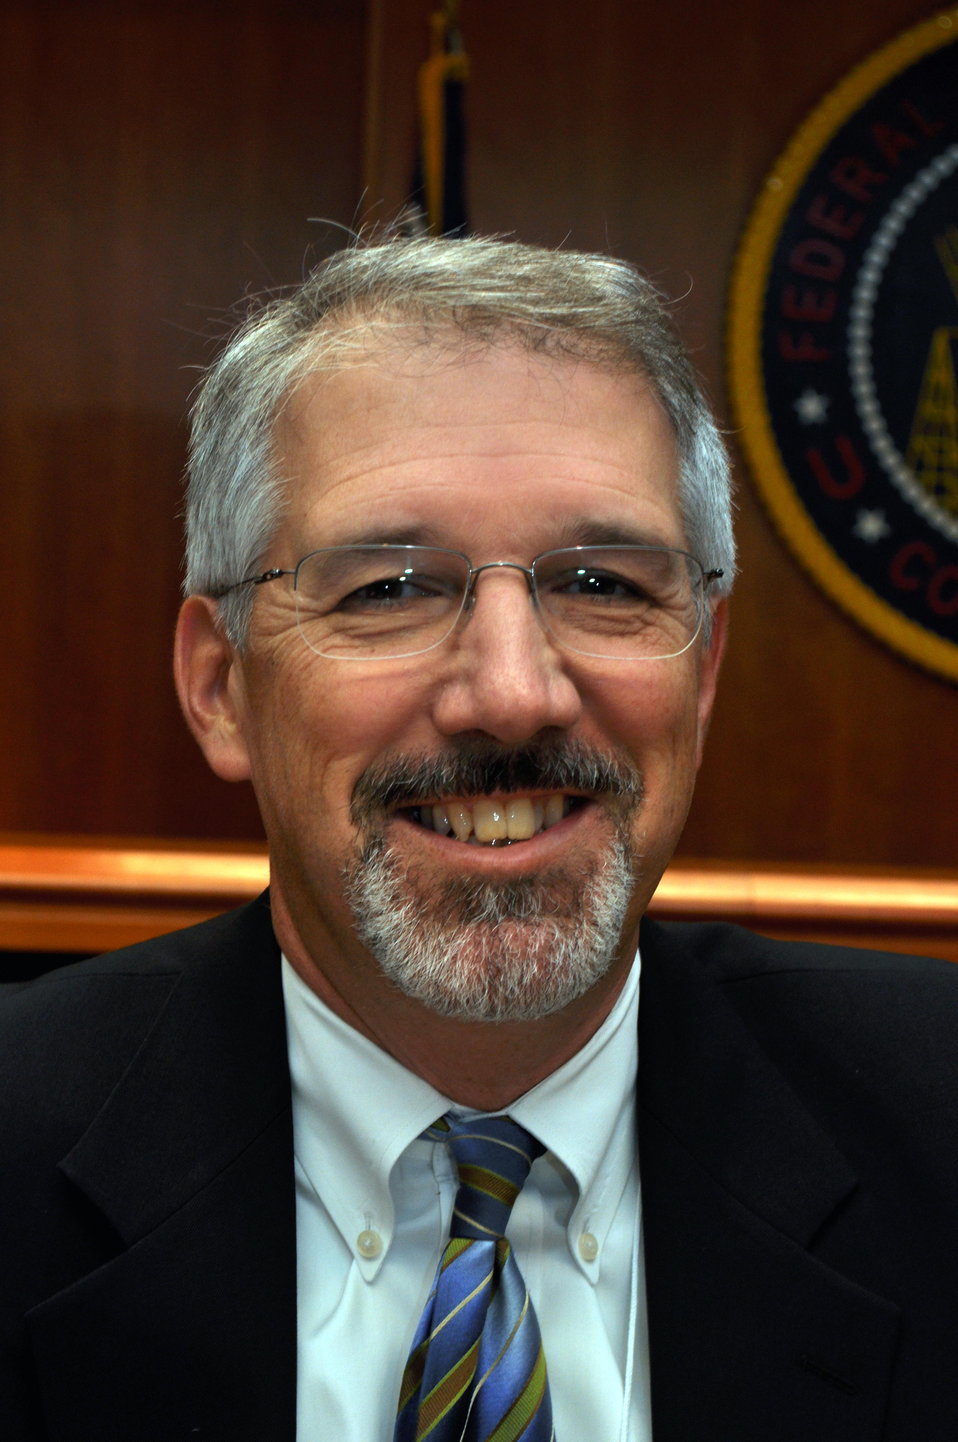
Capitalization Strategies

Workshop for small, minority and women owned businesses. Hosted by the Office of Communications Business Opportunities